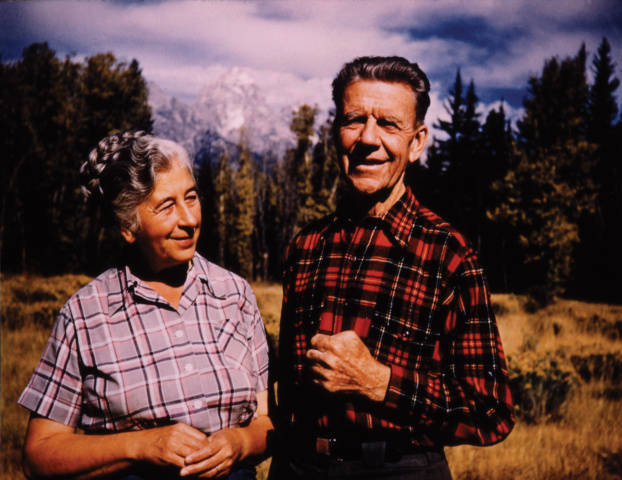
Mardy and Olaus Murie

Conservation heroes and adventurers Mardy (left) and Olaus Murie (USFWS)